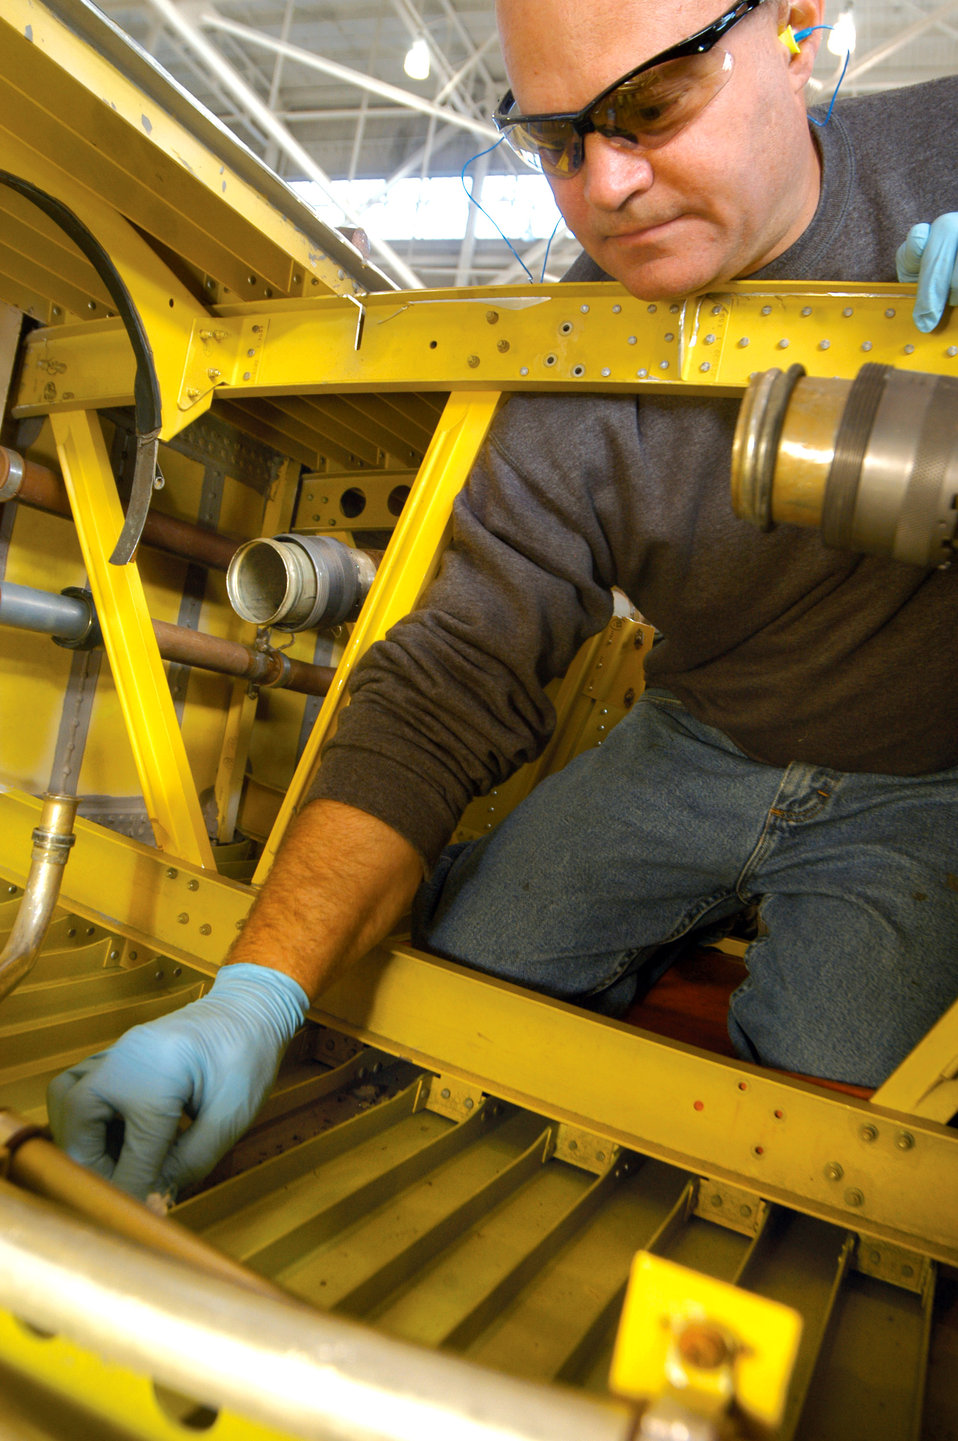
Cooperative effort nets C-130 wing for hands-on training

Michael Gayon does a seal repair inside of a fuel tank on the C-130 Hercules wing at Robins Air Force Base, Ga. Robins AFB units combined forces to procure a wing so students of the 373rd Training Squadron's Field Training Detachment could have hands-on training.